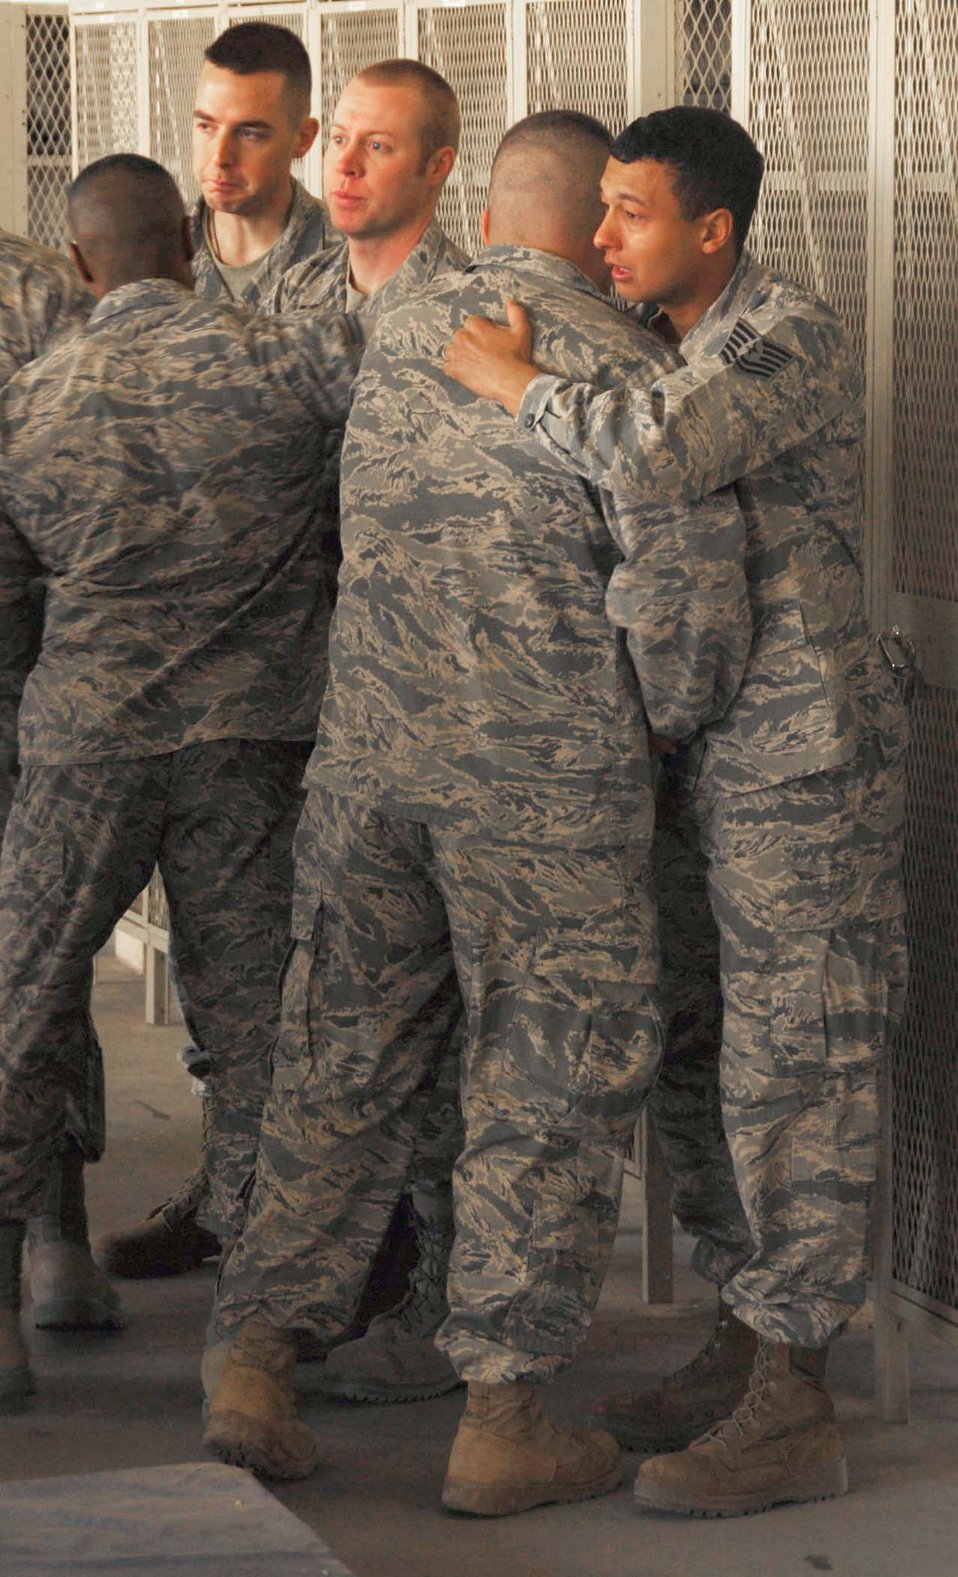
Airman Kozorosky deployed memorial

Deployed firefighters from Kadena Air Base, Japan, mourn the loss of Senior Airman Derek Kozorosky during a memorial ceremony Feb. 16, 2011, in Southwest Asia. Airman Kozorosky died Feb. 11, 2011, at Kadena Air Base, Japan, following a vehicle incident.